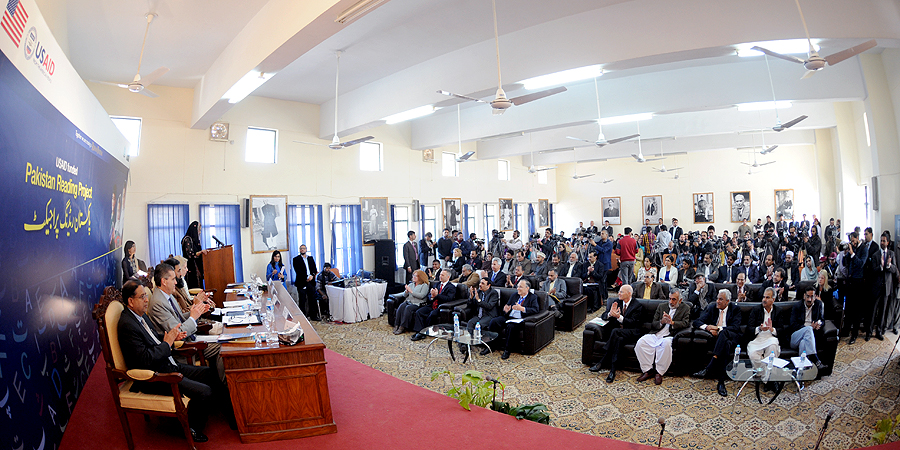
United States and Pakistan Launch the Pakistan Reading Project